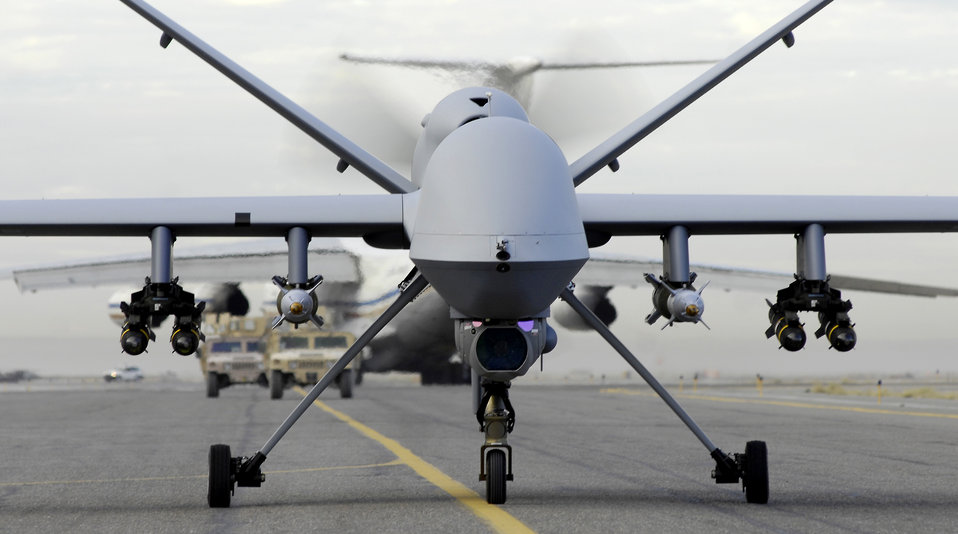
July 8 airpower summary: Reaper drops bomb on enemy

An armed MQ-9 Reaper unmanned aerial vehicle taxis down a runway in Afghanistan.